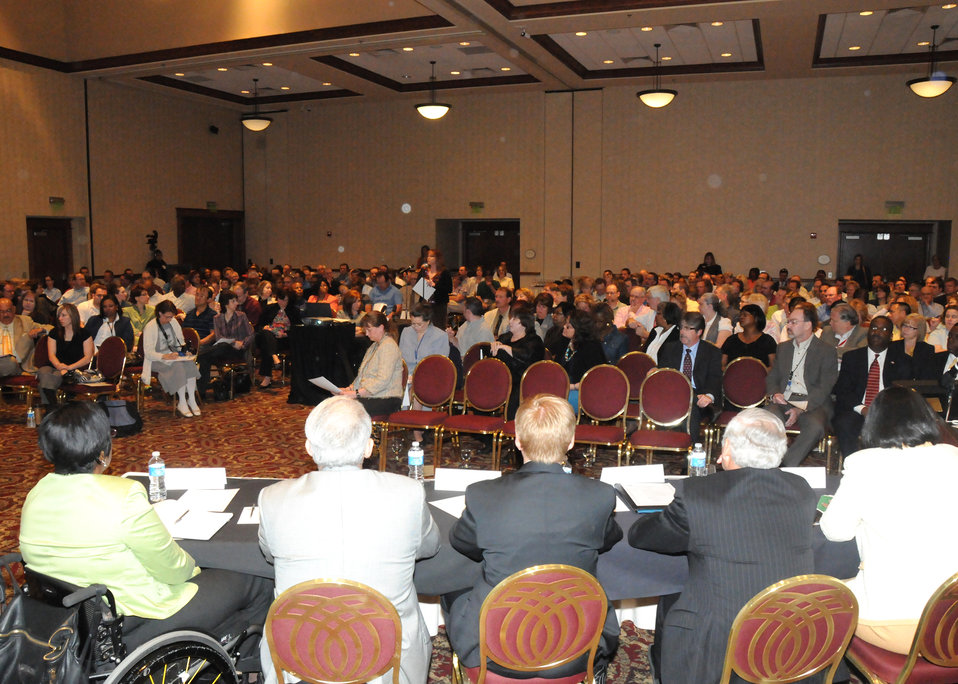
The U. S. Department of Agriculture (USDA) held the third of six Cultural Transformation Employee listening sessions in Kansas City, MO, on Wednesday, April 14, 2010. USDA employees expressed their concerns with issues at the Department and made suggestions for correcting them and improving the image of USDA. USDA photo 10di1309-139.